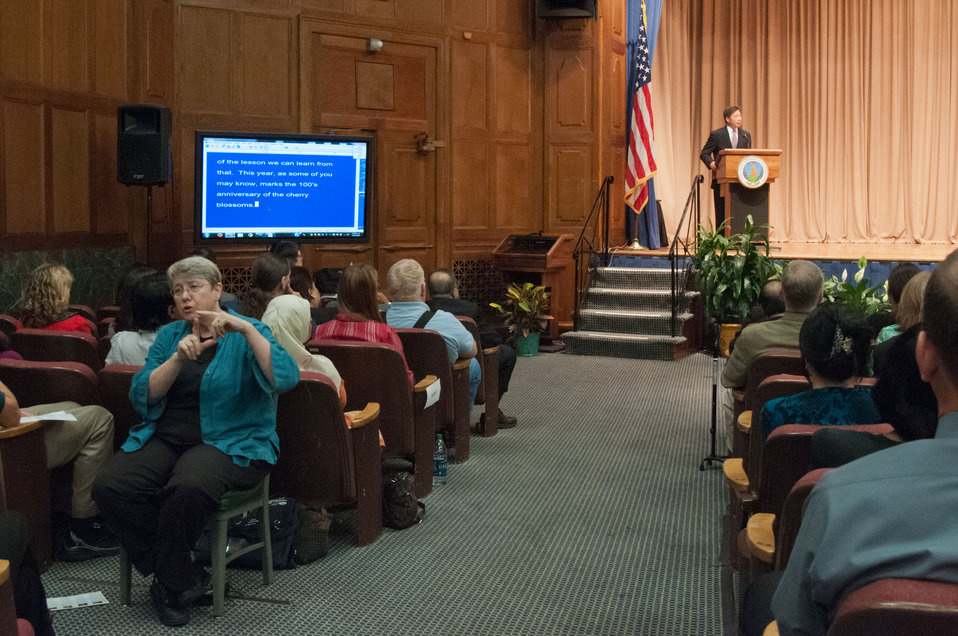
Assistant to the President and Cabinet Secretary The White House Chris Lu was the guest speaker at the 2012 Asian Pacific American Heritage Observance “Striving for Excellence in Leadership, Diversity and Inclusion” at the U.S. Department of Agriculture in Washington, D.C. on Thursday, May 24, 2012. Lu is President Obama’s primary liaison to the Cabinet departments and agencies, helping to coordinate policy and communications strategy and serves as co-chair of the White House Initiative on Asian Americans and Pacific Islanders.